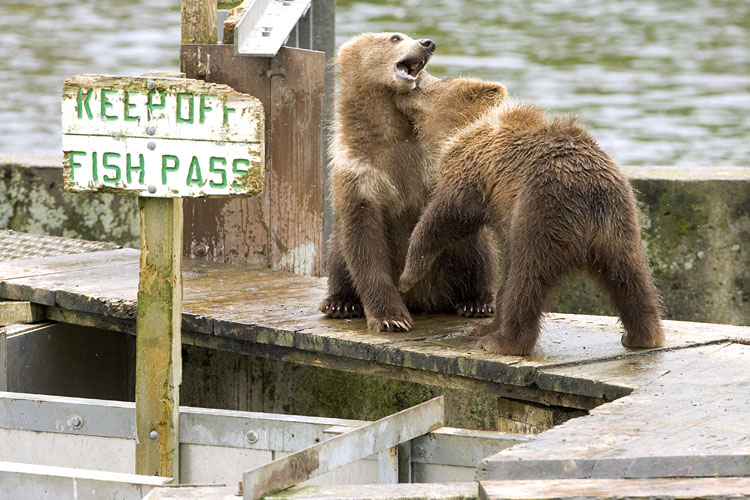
Wildlife of Kodiak Refuge